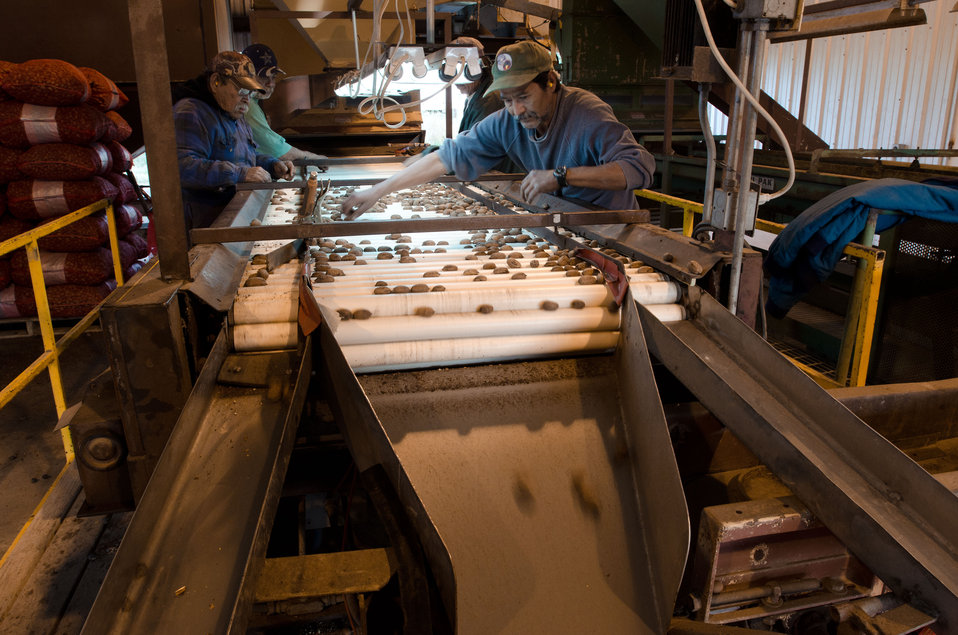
Teodoro Gamez (left) and Jesus Gomez (right) apply their keen eyes and fast hands to sort out any pecans that are less than perfect from the last load of this season's harvest at Arrowhead Farms of Crystal City, TX, on Friday, December 9, 2011, owned by Mr. Akram Mohammad, a pecan farmer since 2005. The 719 acre farm with 10,000 trees, features some orchards with underground micro irrigation system that feeds water to the roots of 4,380 pecan trees on 146 acres. Mr. Mohammad said, “USDA (U.S. Department of Agriculture) was essential to my business and trees surviving the recent exceptional drought. The trees were stress free thanks to underground micro-irrigation. This is essential to the future growth of Texas agriculture and good for America.” U.S. Department of Agriculture’s (USDA) Environmental Quality Initiative Program (EQIP) awarded Mr. Mohammad a $130,000 grant in 2008. He provided $26,000 for the balance of the $156,000 total cost to install a 146-acre underground micro-irrigation for 4,380 trees.